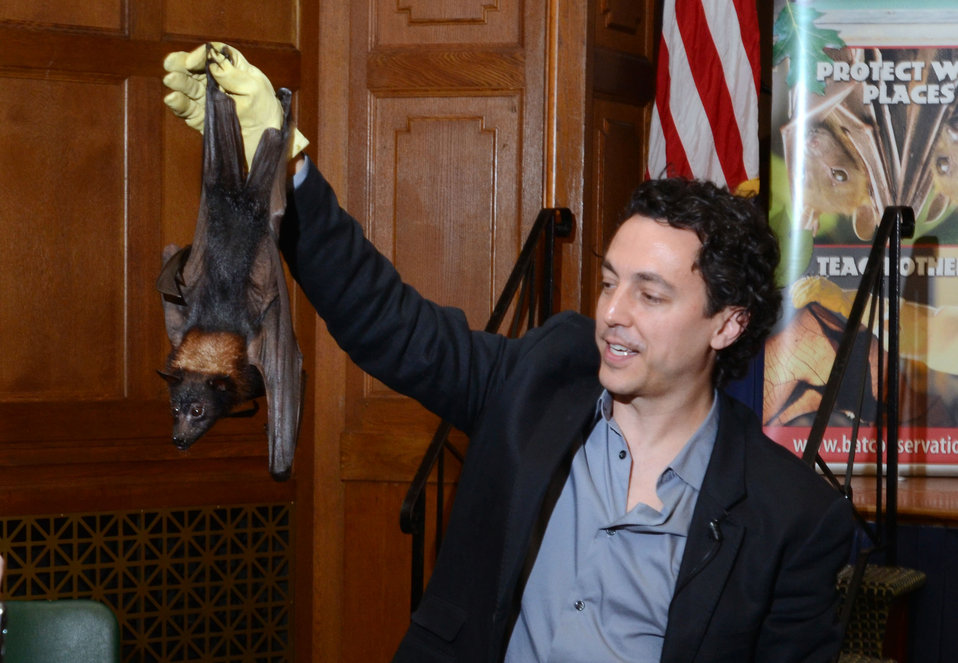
Rob Mies, author, director, and founder of the Organization for Bat Conservation gives a presentation sponsored by the U.S. Forest Service in U.S. Department of Agriculture's, Jefferson Auditiorium, Washington, D.C., Wednesday, May 16, 2012.